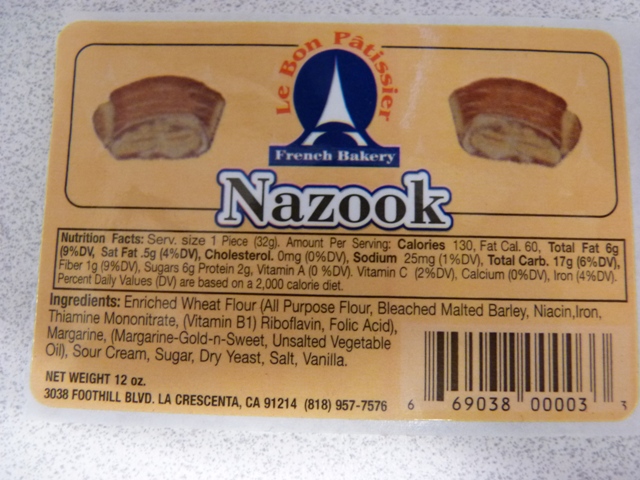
RECALLED - Pastry Products

April 5, 2011 – Product Recall – Le Bon Patissiere-2, Inc. Announces Voluntary Recall On Select Le Bon Patissiere Products That Contain Undeclared Allergens.